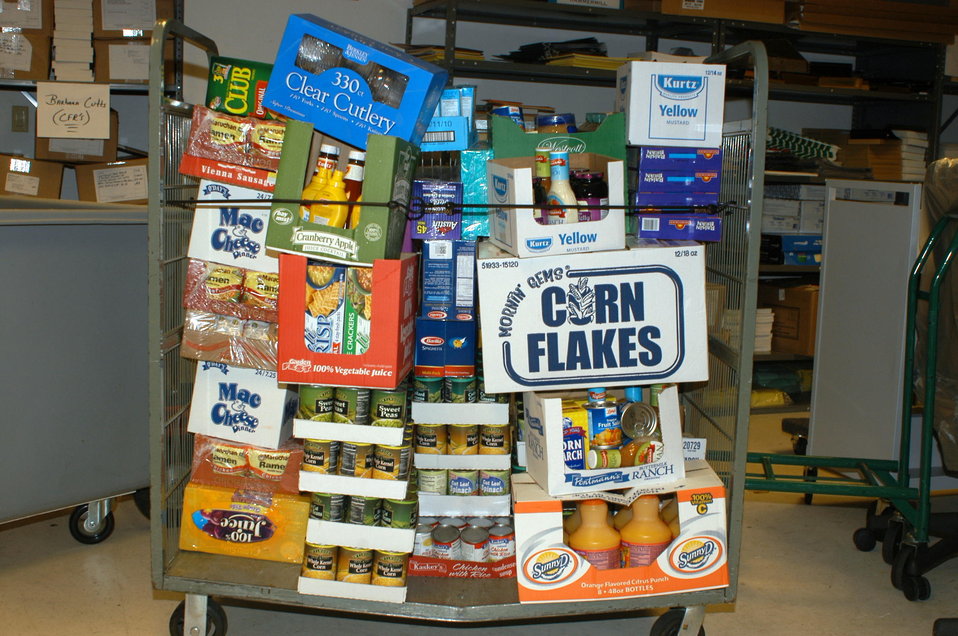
Sierra Exif JPEG